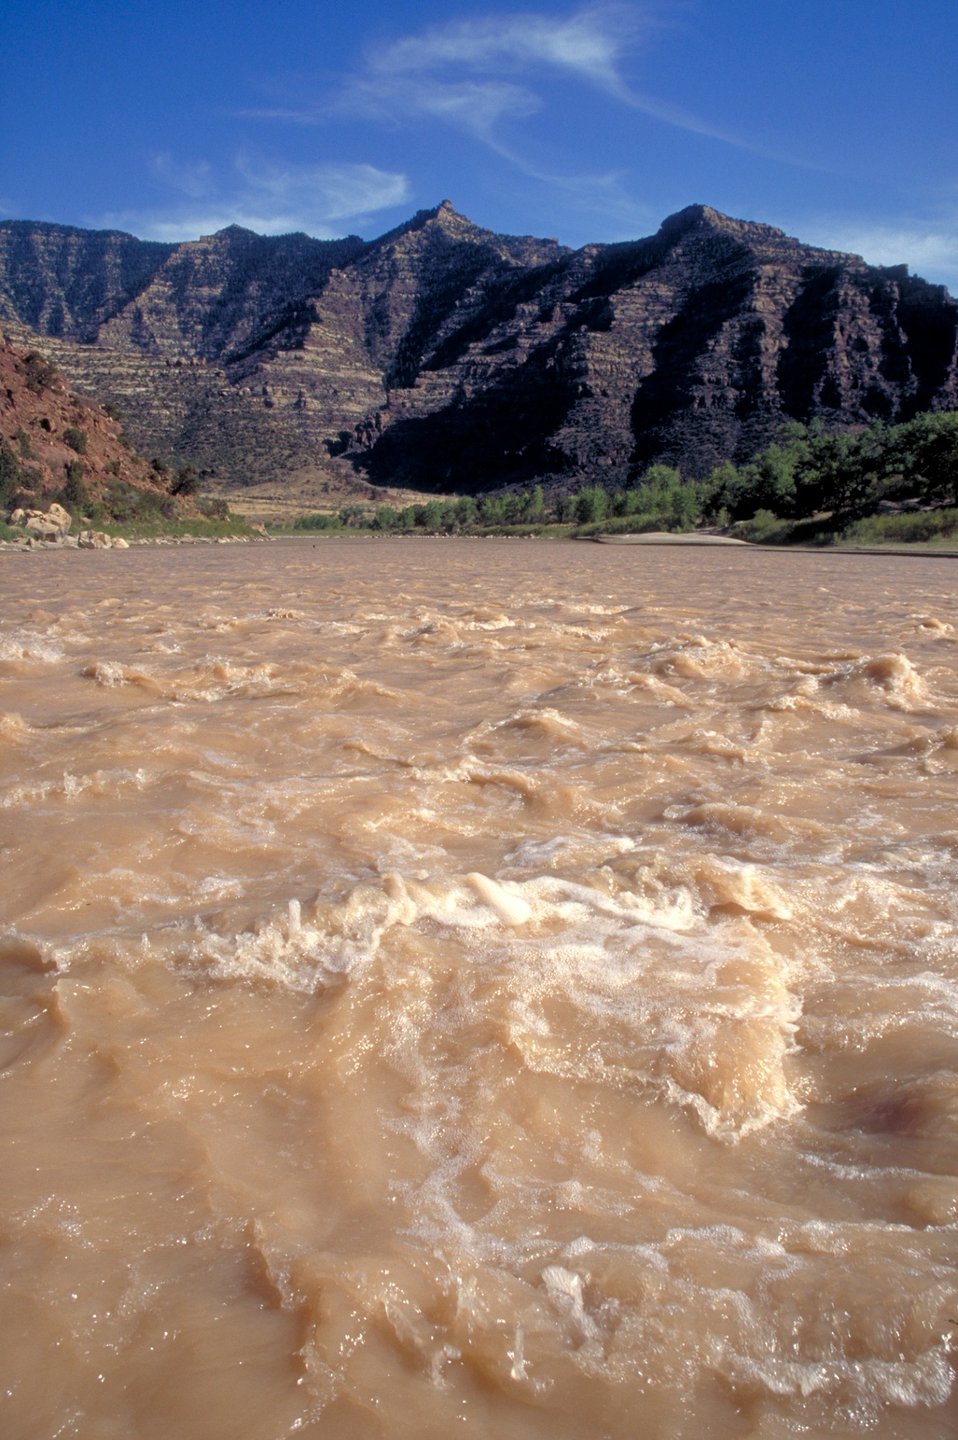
Desolation/Gray Canyons near Price, Utah.